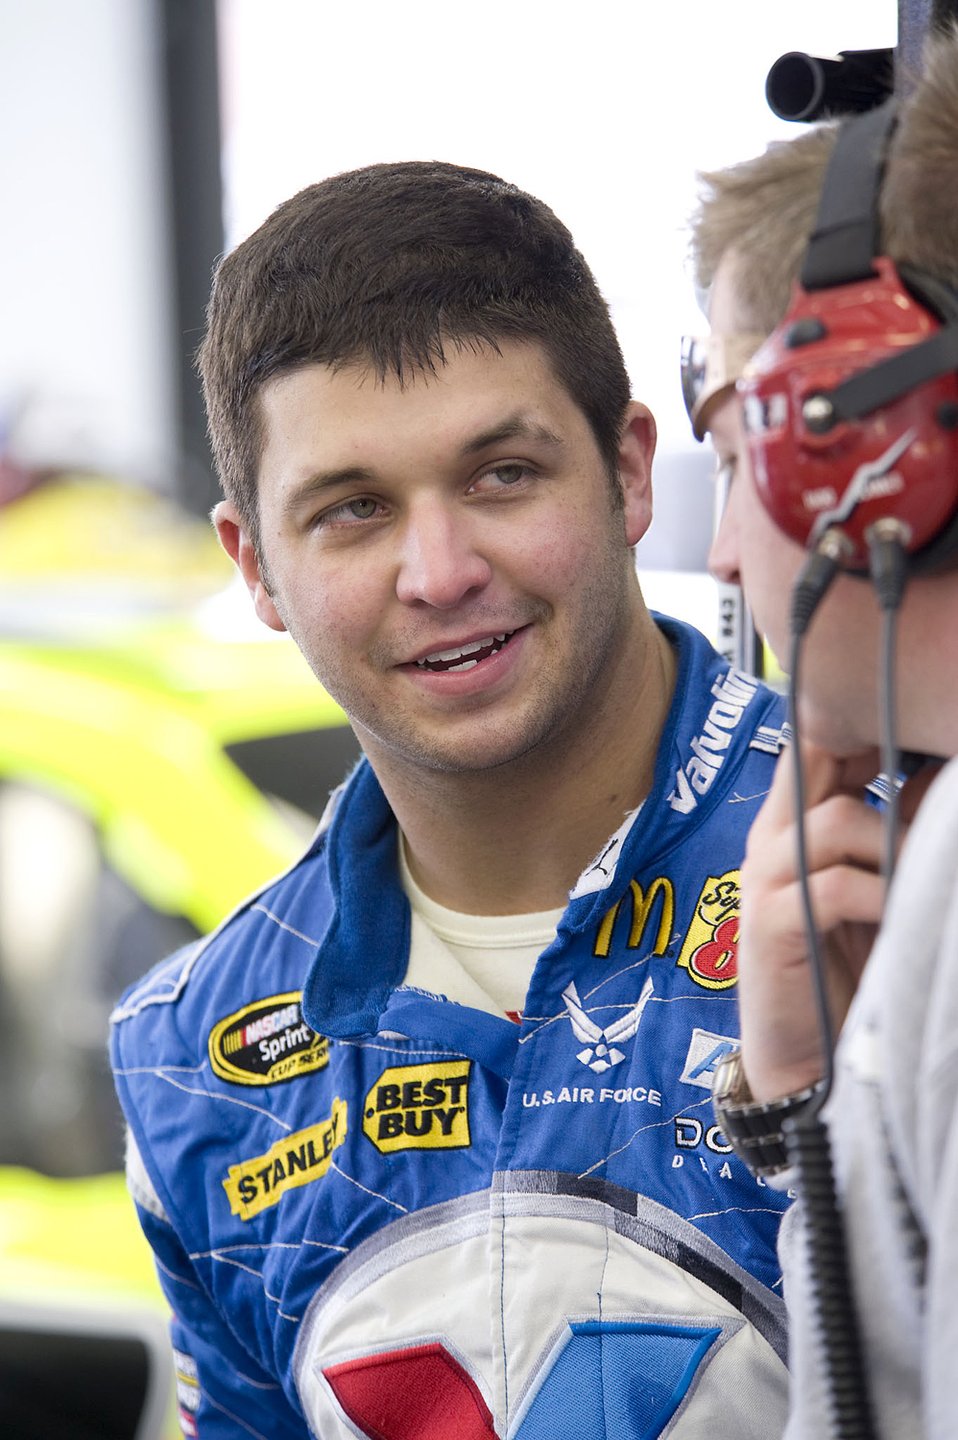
Air Force teams with NASCAR to aid recruiting

Reed Sorenson talks to Mike Shiplett during the final practice before the Shelby 427 race Feb. 28 at Las Vegas Motor Speedway in Nevada. Mr. Sorenson is the driver of the Air Force sponsored Sprint Cup series car, and Mr. Shiplett is the crew chief.